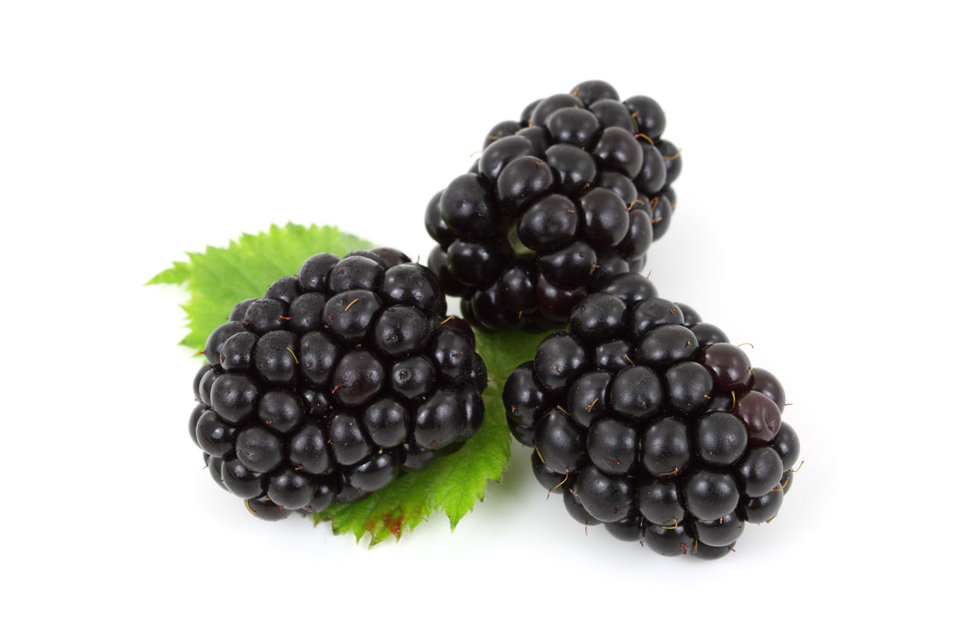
Blackberries

Fresh blackberries isolated on white background.